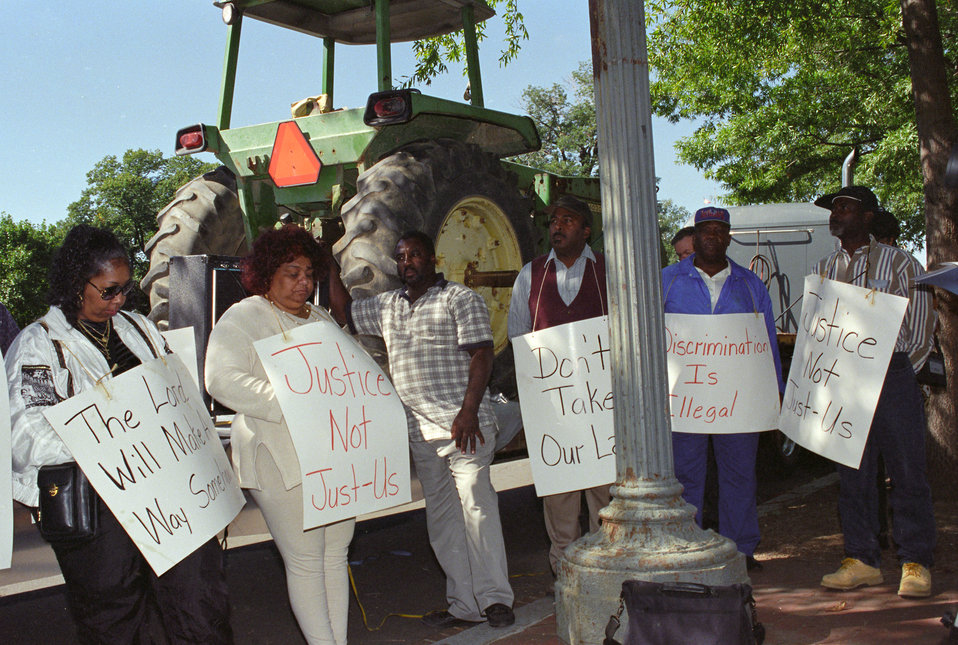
Black farmers protest at Lafayette Park across from the White House in Washington, D.C. on September 22, 1997. Protesters alleged the U.S. Department of Agriculture (USDA) denied black farmers equal access to farm loans and assistance based on their race. North Carolina farmer Timothy Pigford and 400 other black farmers filed the Pigford v. Glickman (Pigford I) class-action lawsuit against USDA in 1997. The USDA settled Pigford I in 1999.